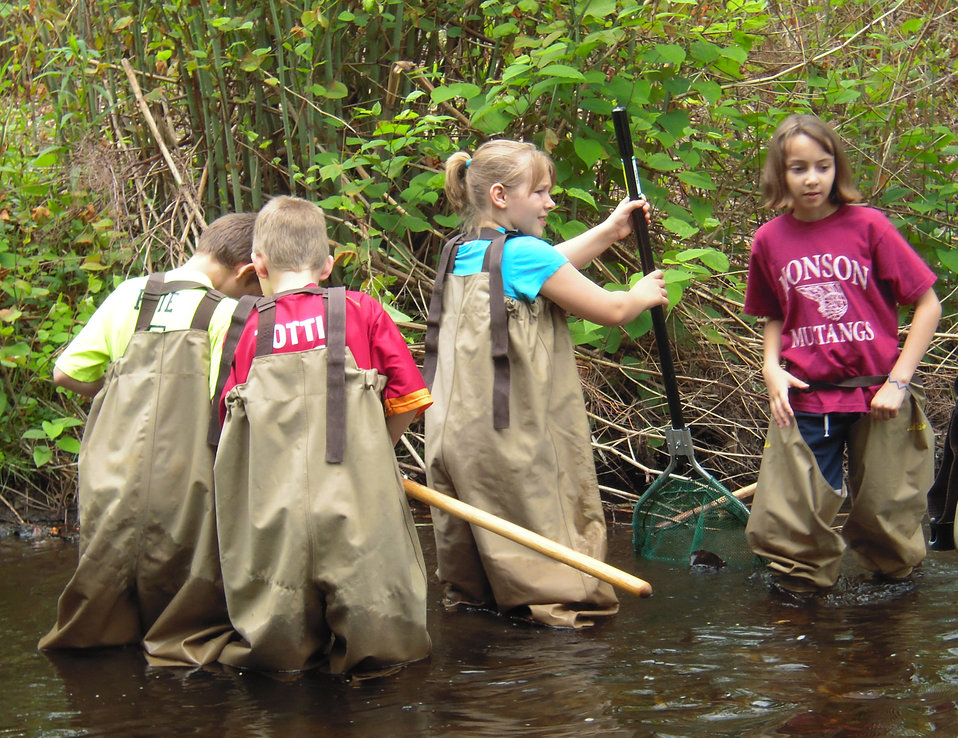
Photo of the Week - Students filling their nets

Photo of the Week - 07/06/2010

Elementary school students involved in the Atlantic Salmon Egg Rearing Program search the stream with nets.